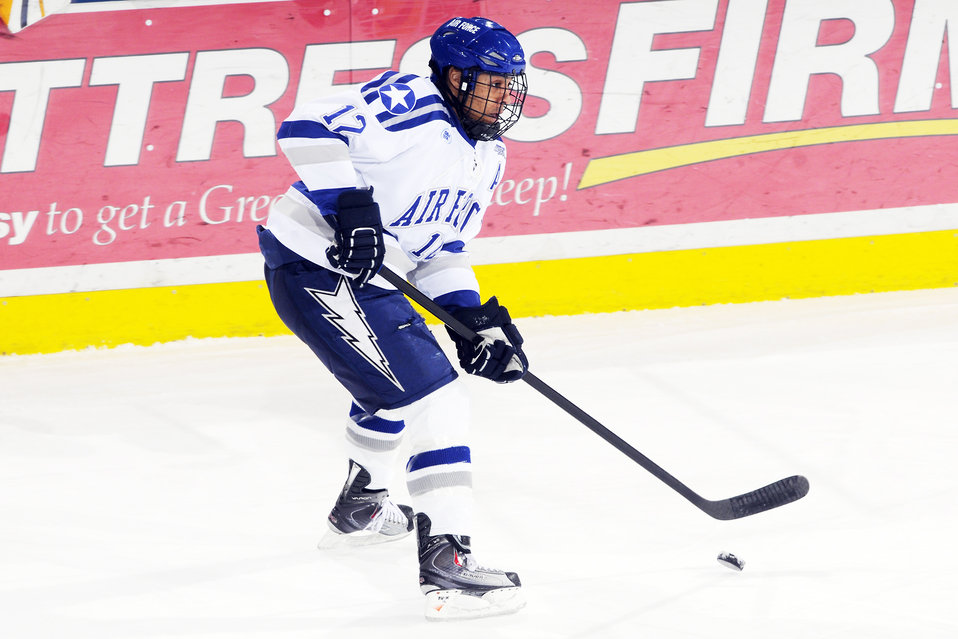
Air Force Academy

U.S. Air Force Academy, CO -- Senior forward Matt Fairchild looks for an open man as Air Force blanked Bentley 3-0 at the Cadet Ice Arena Nov 7. Air Force is 4-5-1 overall and 4-1-1 in the Atlantic Hockey Association. Air Force plays its next four games on the road, starting with a two-game series at Holy Cross, Friday and Saturday in Worcester, Mass.